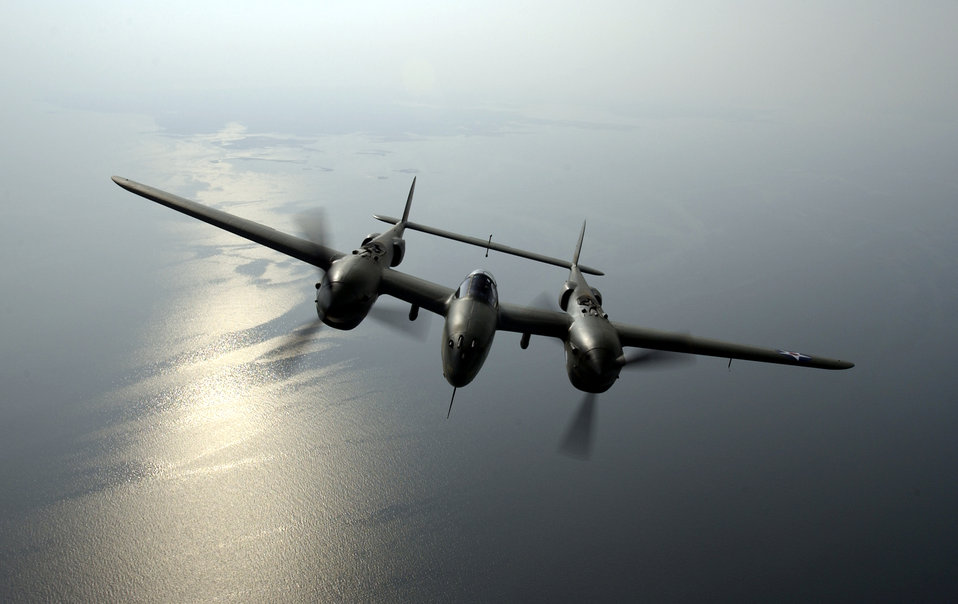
Air power demonstration

OVER VIRGINA -- Steve Hinton flies